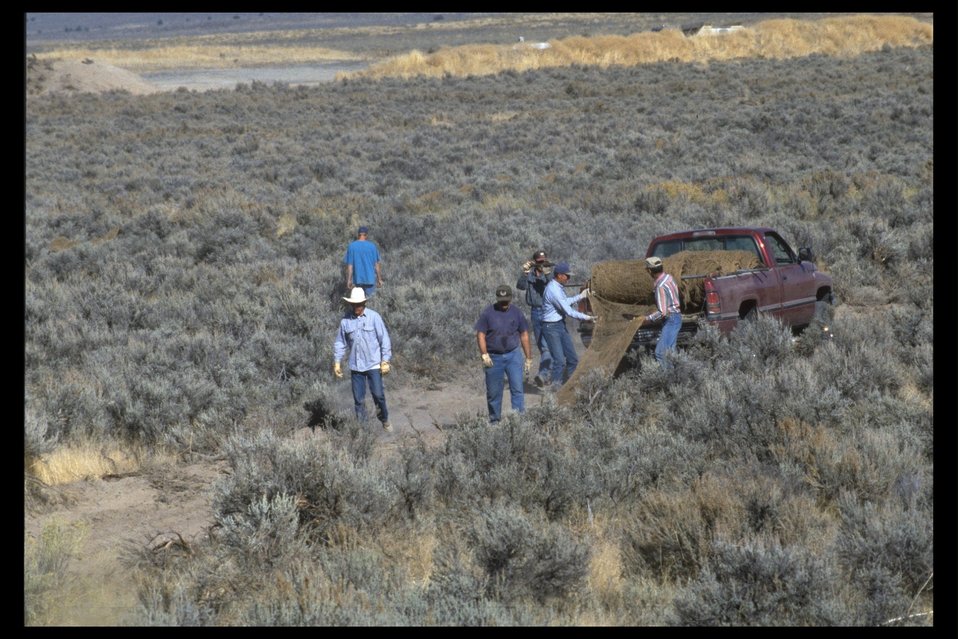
Constructing the horse trap wing in the South Steens HMA.